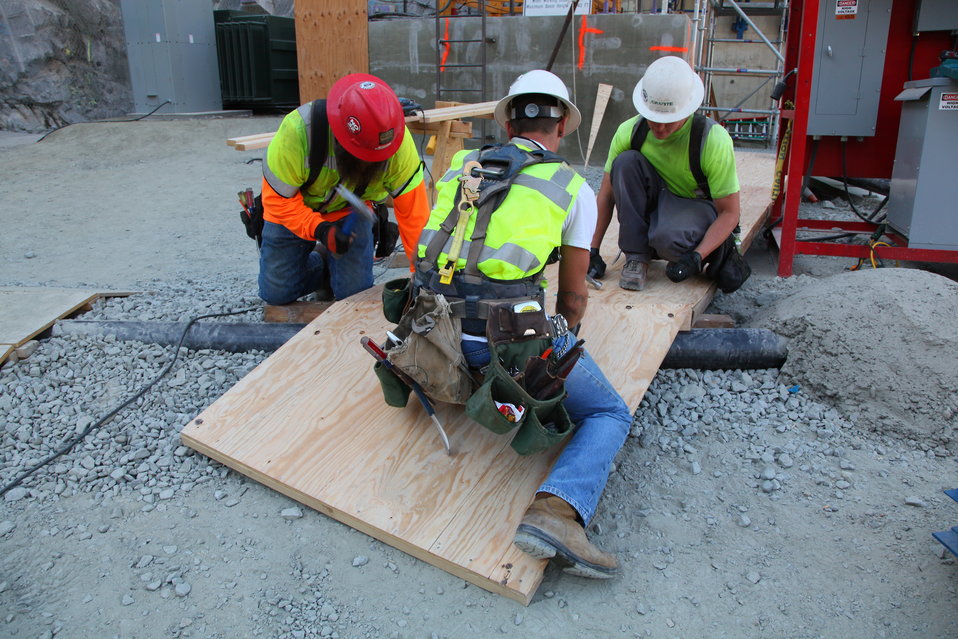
Safety a priority at Folsom Dam project

Contractors for the U.S. Army Corps of Engineers Sacramento District prepare a wooden walkway for workers to safely navigate the construction zone at the auxiliary spillway at the Folsom Dam in Folsom, Calif., Sept. 19, 2012. Safety at the job site is a number one priority; equipment and personal safety are a requirement. The Sacramento District is building the spillway in cooperation with the U.S. Bureau of Reclamation, the Central Valley Flood Protection Board, and the Sacramento Area Flood Control Agency to improve the safety of the existing dam and reduce flood risk for the greater Sacramento area.